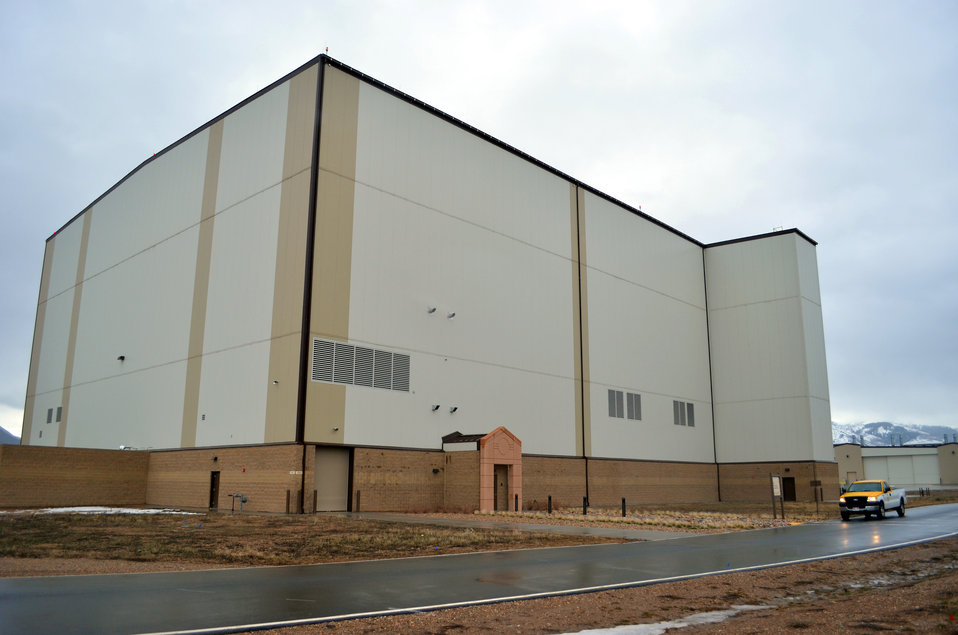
F-22, F-35 aircraft facilities near completion at Hill Air Force Base

Construction is near completion on new facilities at Hill Air Force Base, Utah, to test the stealth capabilities of the base’s F-22 and F-35 fighter jets, shown Feb. 14, 2014. The U.S. Army Corps of Engineers Sacramento District is overseeing construction of the 49,827-square-foot facility, which will be used to test the radar signature of the F-22, F-35 and other aircraft to ensure that required levels of radar stealth are met. The facility is scheduled to be complete early 2014.